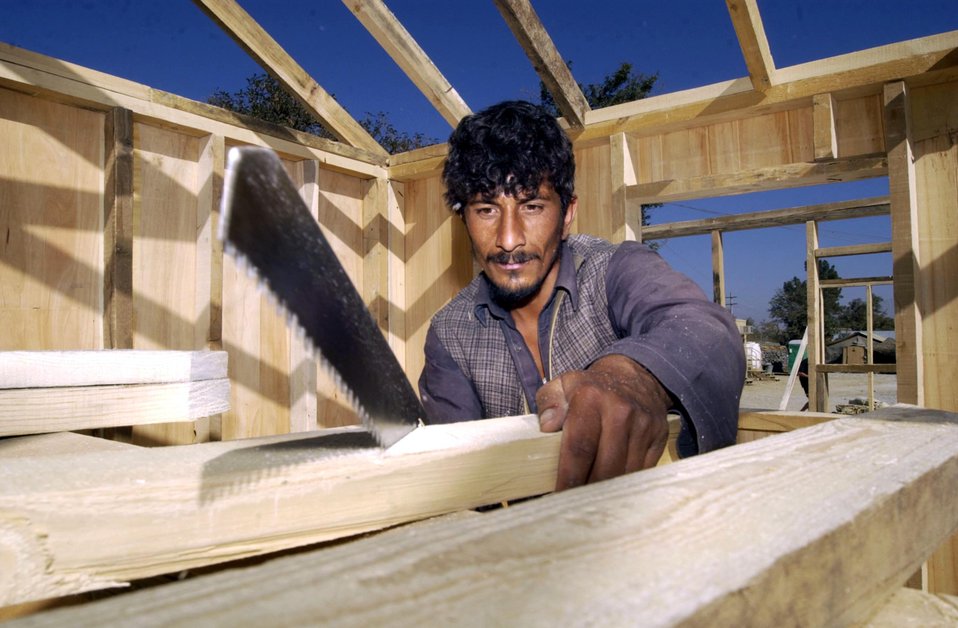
From tents to huts

BAGRAM AIR BASE, Afghanistan -- Fazell uses a hand saw to cut a plank inside a B-hut at Air Force Village here. Afghan carpenters construct these huts using only hand tools. Even sheets of plywood are cut by hand. The huts will replace the temper tents as living quarters.